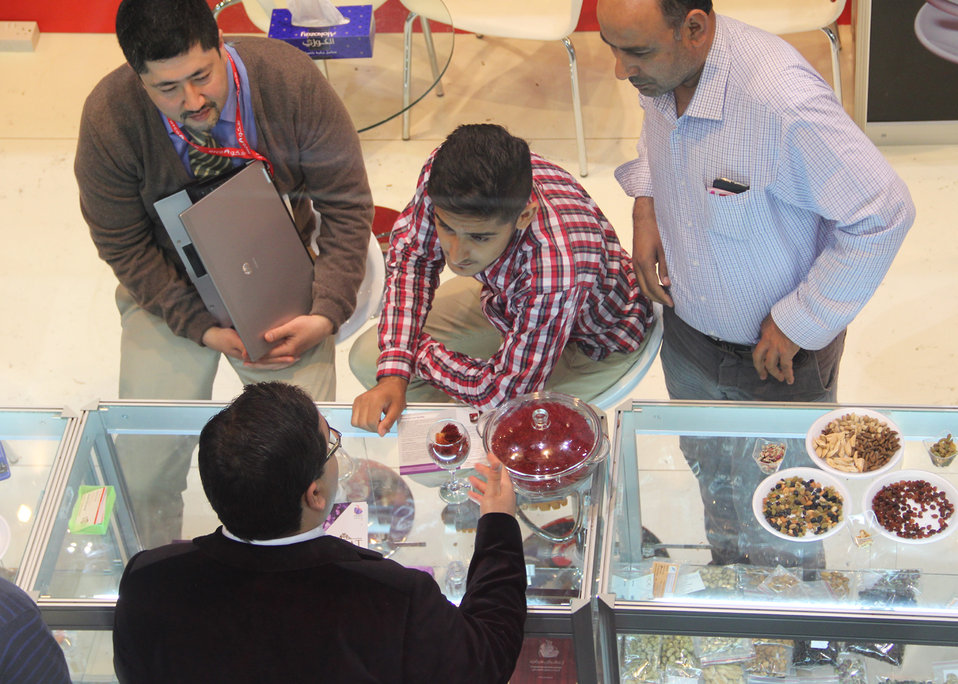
Gulfood buyers discuss a possible deal for Afghanistan’s saffron, which won first prize for quality in an international competition in France in late 2012. Afghan traders signed deals worth more than $2 million dollars during the first two days of the e